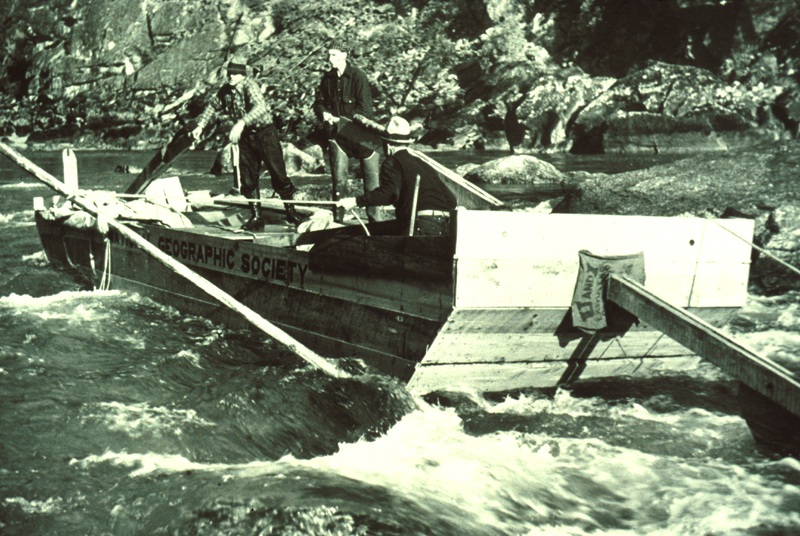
National Geographic Expedition (1935) Lower Salmon River Cottonwood Field Office Upper Columbia Salmon Clearwater District